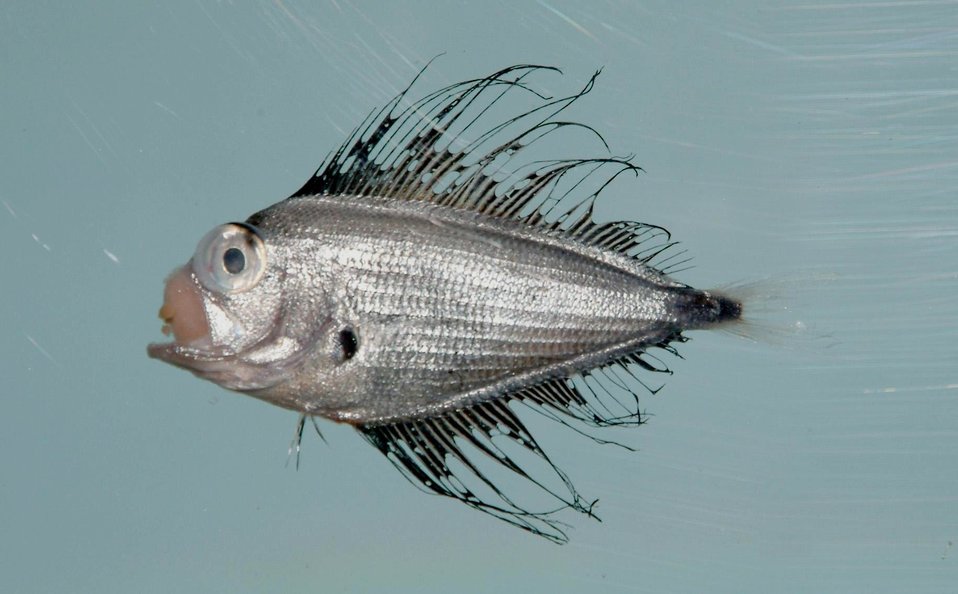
Atlantic fanfish or silver sea bream ( Pterycombus brama )